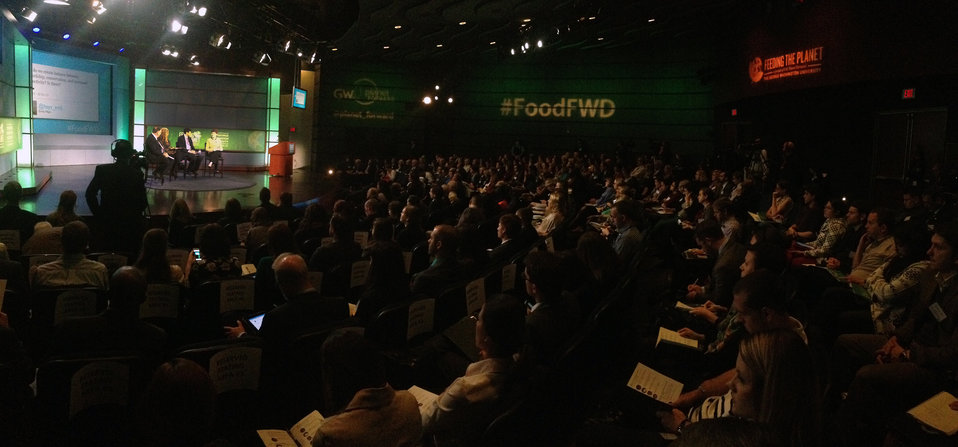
Left to right; Marie Nelson, Senior Director and Executive Producer of News and Original Programming, BET Networks, Moderator, Jose Andres, Chef/Owner of ThinkFoodGroup, Founder of World Central Kitchen, and Culinary Creator and Advocate, Shenggen Fan, Ph.D. Director General, International Food Policy Research Institute and Krysta Harden, Deputy Secretary of Agriculture on the discussion panel “Policy, Palate, and the Plate-Innovation and how policy can impact practice at the Feeding the Planet Summit of leaders from agriculture, business, finance, academia, Non Governmental Organization, government and media, along with a large contingent of college students to engage around promising innovations in global agriculture and food security. The Summit spotlights transformation and scalable developments in policy, practices and technologies with special attention to related issues of gender, climate change and urbanization at The George Washington University in Washington, DC, on Wednesday, Oct. 31, 2013.